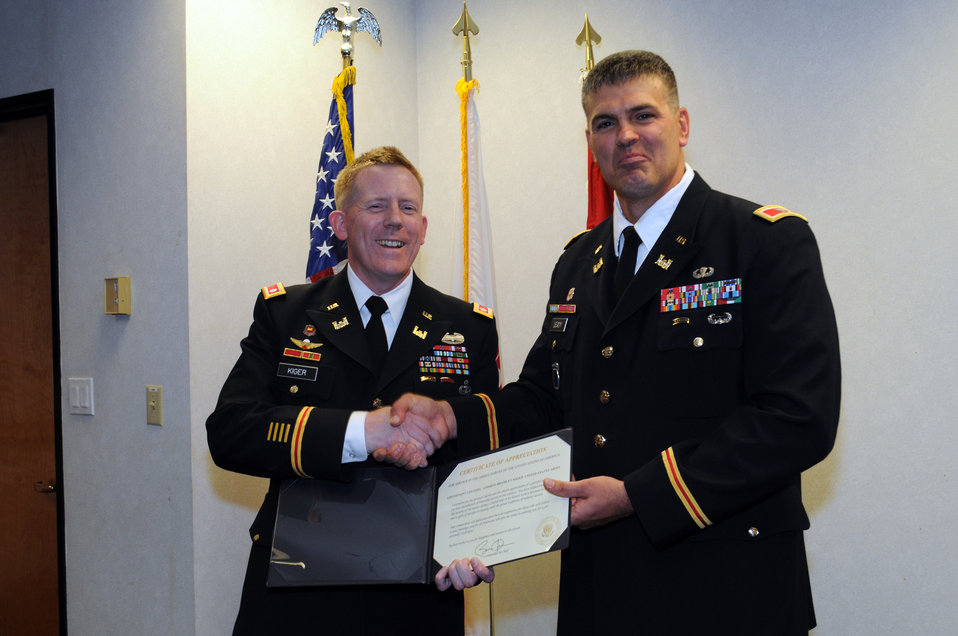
District deputy commander retires

After 23 years of service to our nation, Sacramento District Deputy Commander Lt. Col. Andy Kiger (left) retired from the United States Army Oct. 21, 2011. Here, he is presented with a Presidential Certificate of Appreciation by District Commander Col. Bill Leady in a ceremony at district headquarters in Sacramento, Calif. Kiger also received a Legion of Merit, one of the military's highest honors.